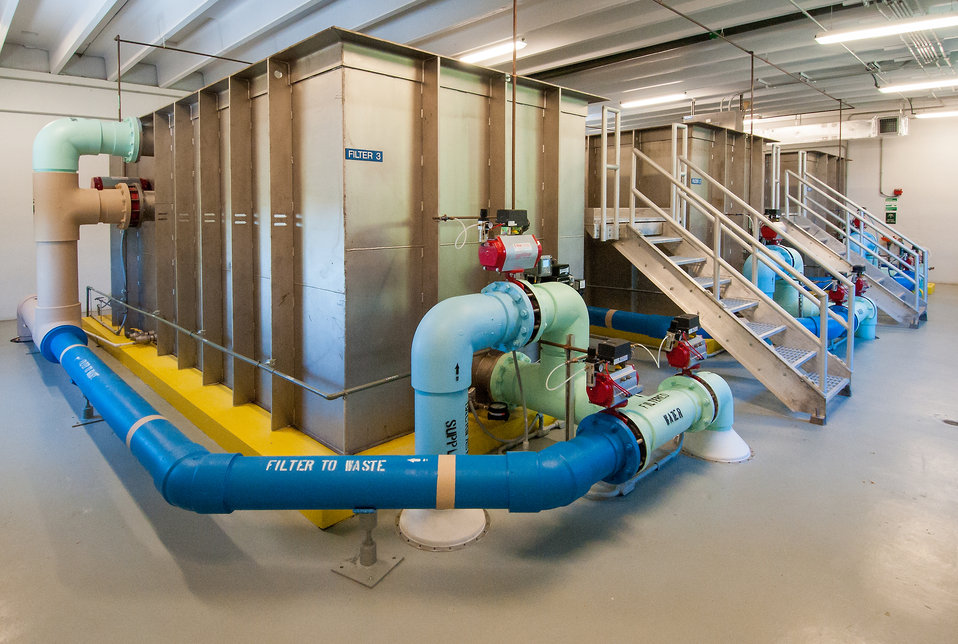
The Vergennes-Panton Water District along Lake Champlain in Vergennes, VT was able to upgrade the city’s water treatment plant with a Water and Environmental Programs (WEP) loan from the U.S. Department of Agriculture (USDA) Rural Development (RD).The upgrade included a complete process equipment replacement including new filter units, pumps, controls and piping on Sep. 18, 2013.